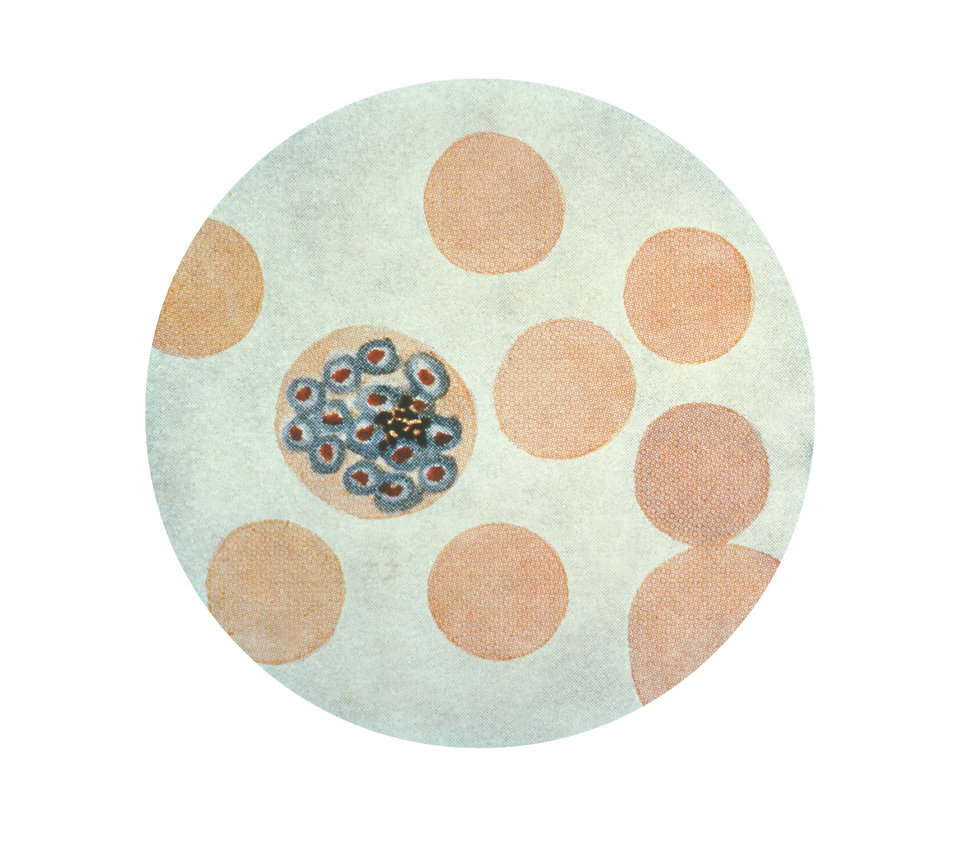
A photomicrograph of Plasmodium vivax showing merozoites just prior to disruption using Wright's stain. (x1500)